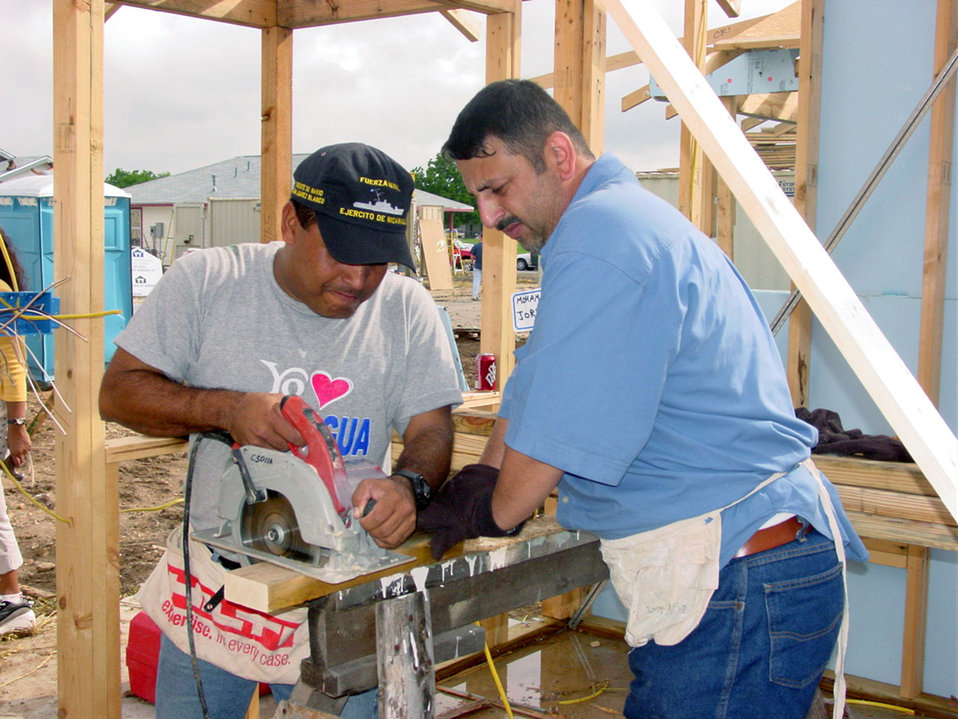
International aid

SAN ANTONIO -- Jordanian Lt. Col. Mohammad Alhyari steadies a board as Nicaraguan Lt. Cmdr. Juan Juarex Blanco cuts it to help build a Habitat for Humanity house here May 8. Nine students from the Defense Language Institute at Lackland Air Force Base, Texas, took part in the project. The school's informational program lets students use their language skills by getting involved in the local community.